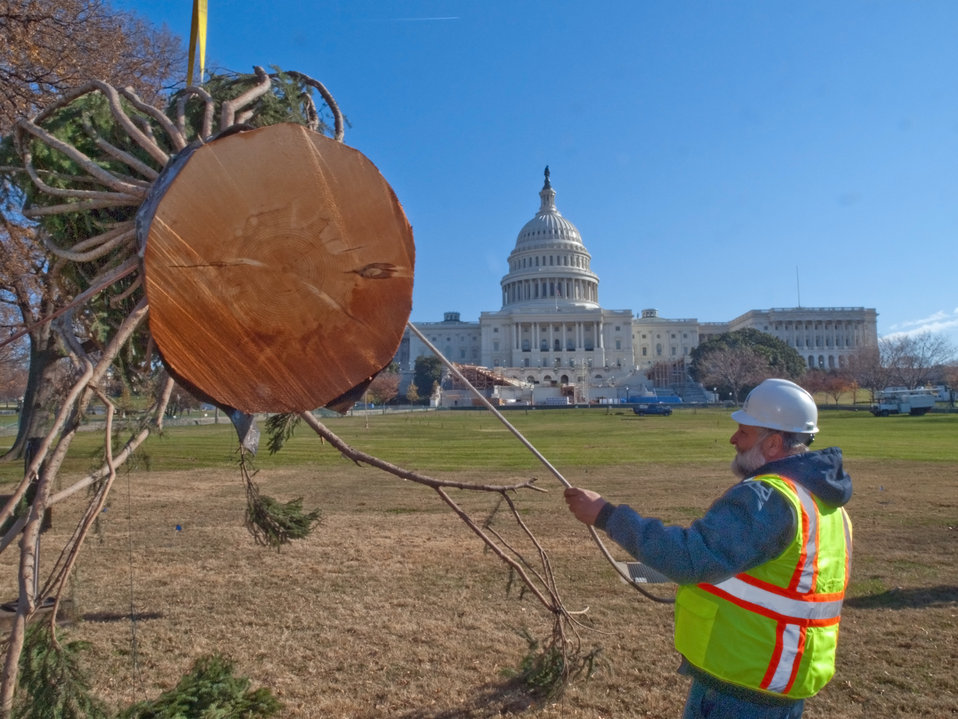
Members of the Capitol grounds crew move the 2012 Capitol Christmas Tree from its truck after it arrived in Washington, D.C. on Nov.26, 2012. The 73-foot Englemann spruce traveled from the White River National Forest in Colorado.